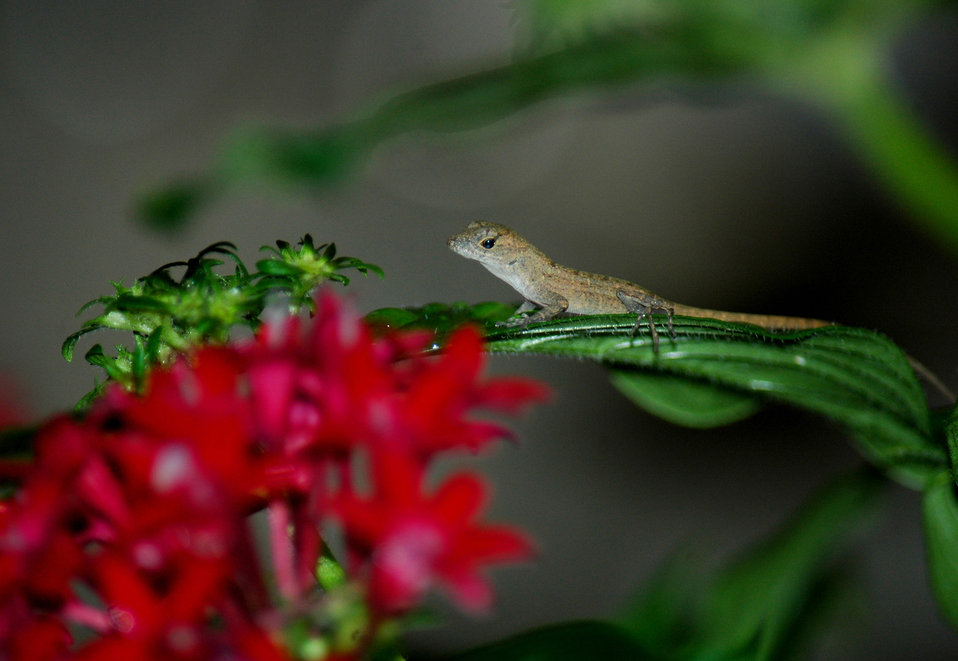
Baby anole lizard

A baby anole or lizard resting on a red penta plant. photographed in florida..